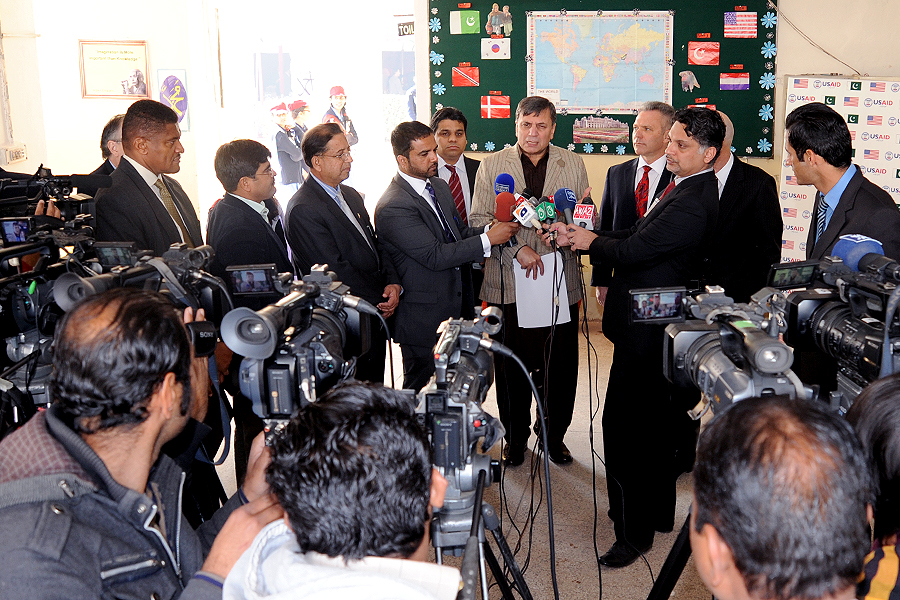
United States and Pakistan Launch the Pakistan Reading Project